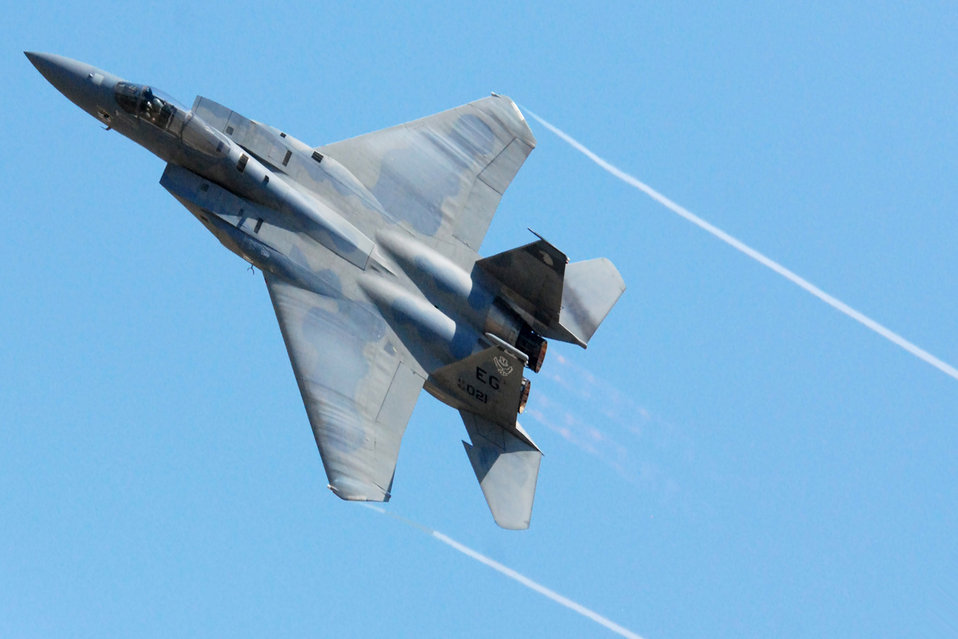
Heritage flight

Capt. Sam Joplin performs aerial maneuvers in an F-15 Eagle to display the capabilities of the fighter to hundreds of base and community spectators during a demonstration May 1 at Eglin Air Force Base, Fla. The Air Combat Command demo team has performed more than 150 times to spectators around the globe over the last two years. This is the final demonstration for the F-15C, completing a 26-year career that began in 1983. Captain Joplin is an F-15 West Coast Demonstration Team pilot.